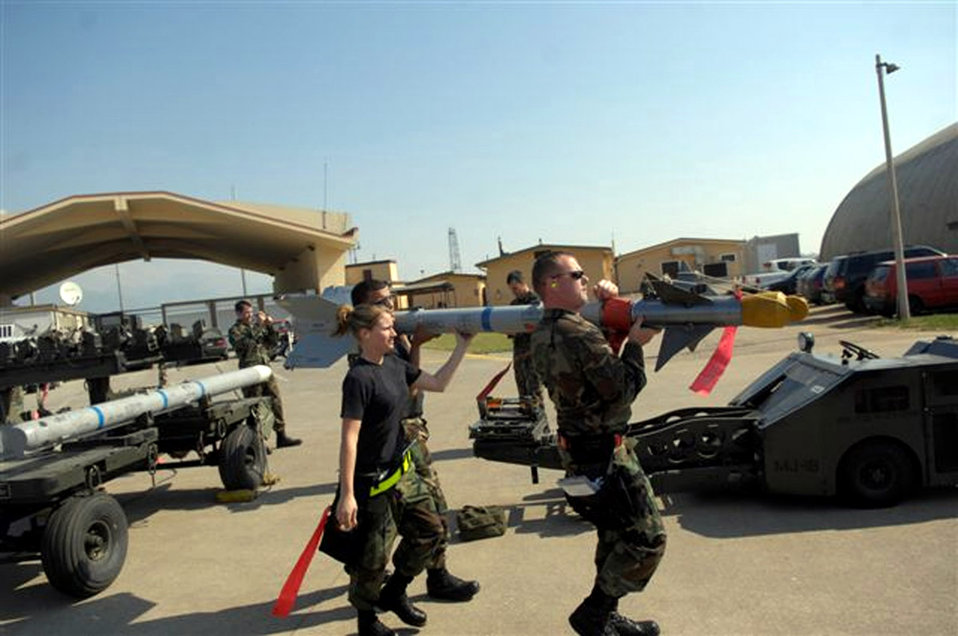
Weapons loading competition hones Airmen's skills

Three Airmen from the 555th Fighter Squadron at Aviano Air Base, Italy, prepare to load an AIM-9 missile onto an F-16 Fighting Falcon during a recent weapon loading competition.